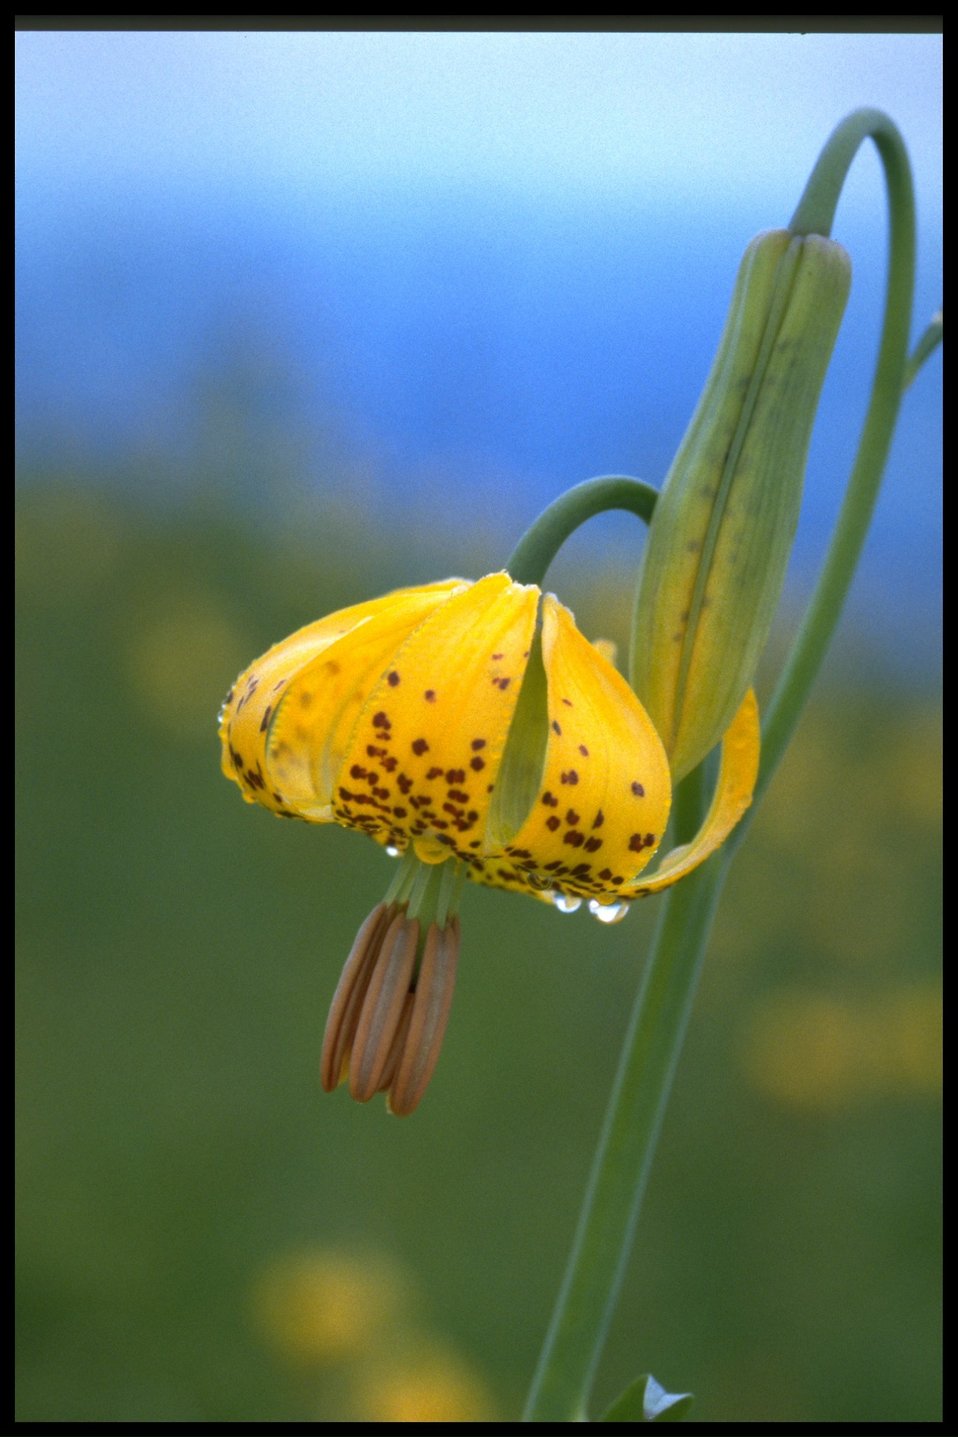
Medium shot of tiger lily, Lilium columbianum.